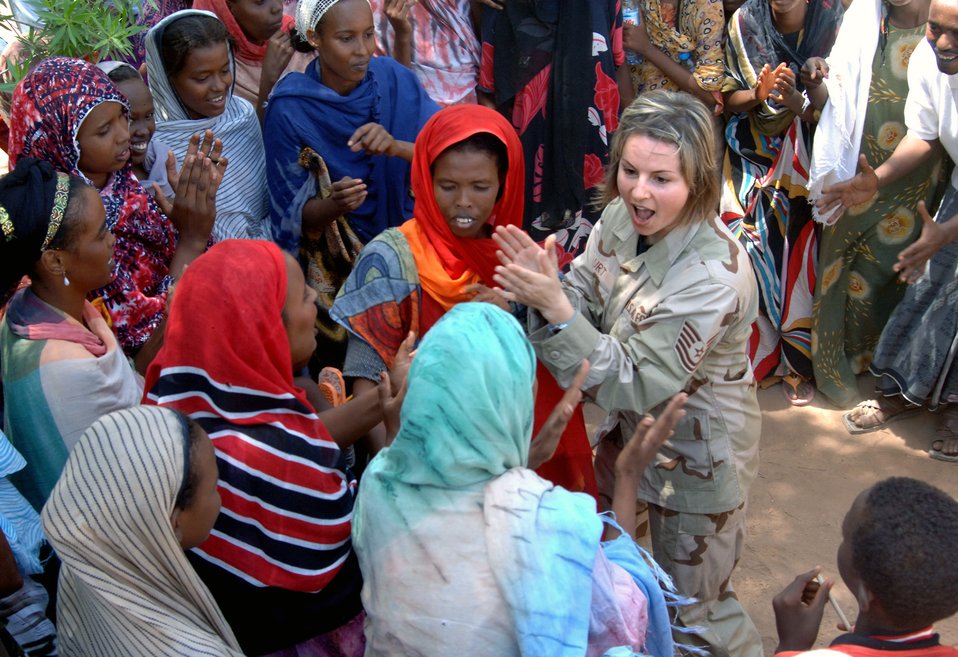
Djibouti dance

Tech. Sgt. Sherry Burt dances and sings with people from the village of Damerjog, Djibouti after performing with the U.S. Central Command Air Forces Expeditionary Band, the Desert Ramblers. Sergeant Burt is a vocalist and Irish flute player.